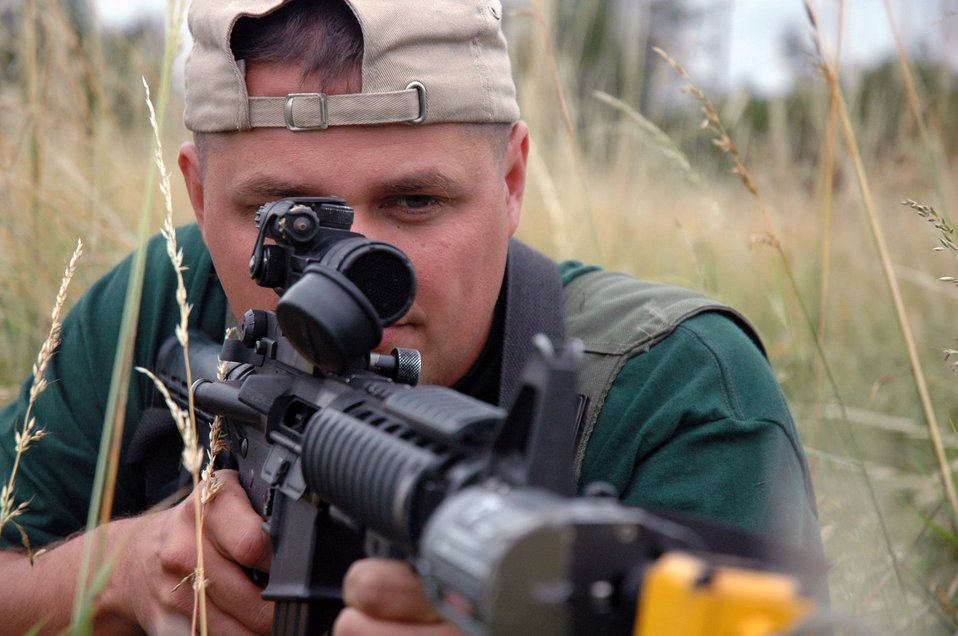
Security forces Rodeo teams tested by the best

Tech. Sgt. Roy Carter, an